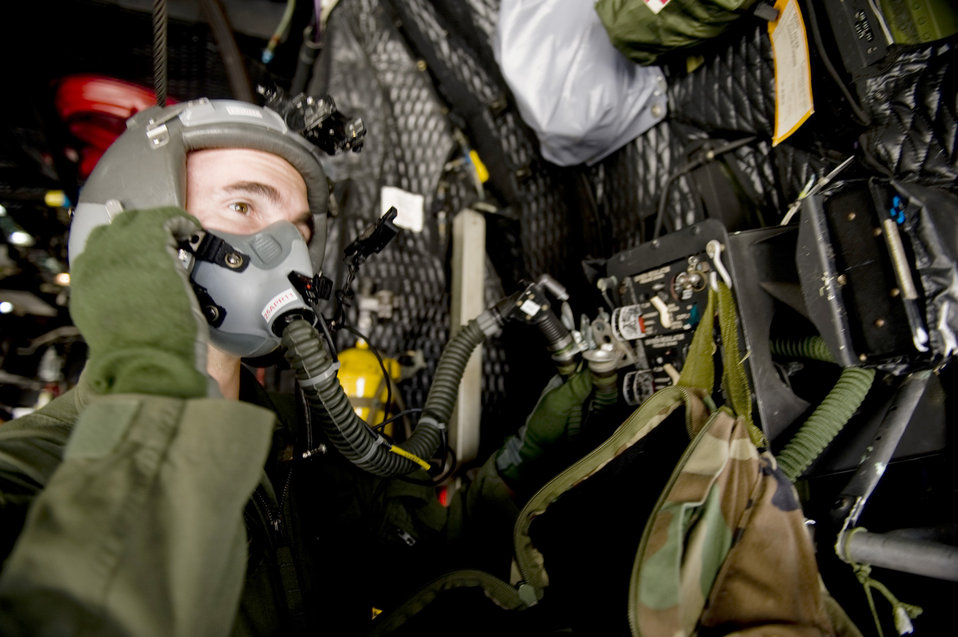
Delivering supplies

Master Sgt. Mike Milich tests the emergency oxygen systems aboard an MC-130P Combat Shadow March 16, 2011, at Kadena Air Base, Japan, prior to a supply-delivery flight to Sendai Airport, Japan. Sergeant Milich is assigned to the 353rd Special Operations Group.